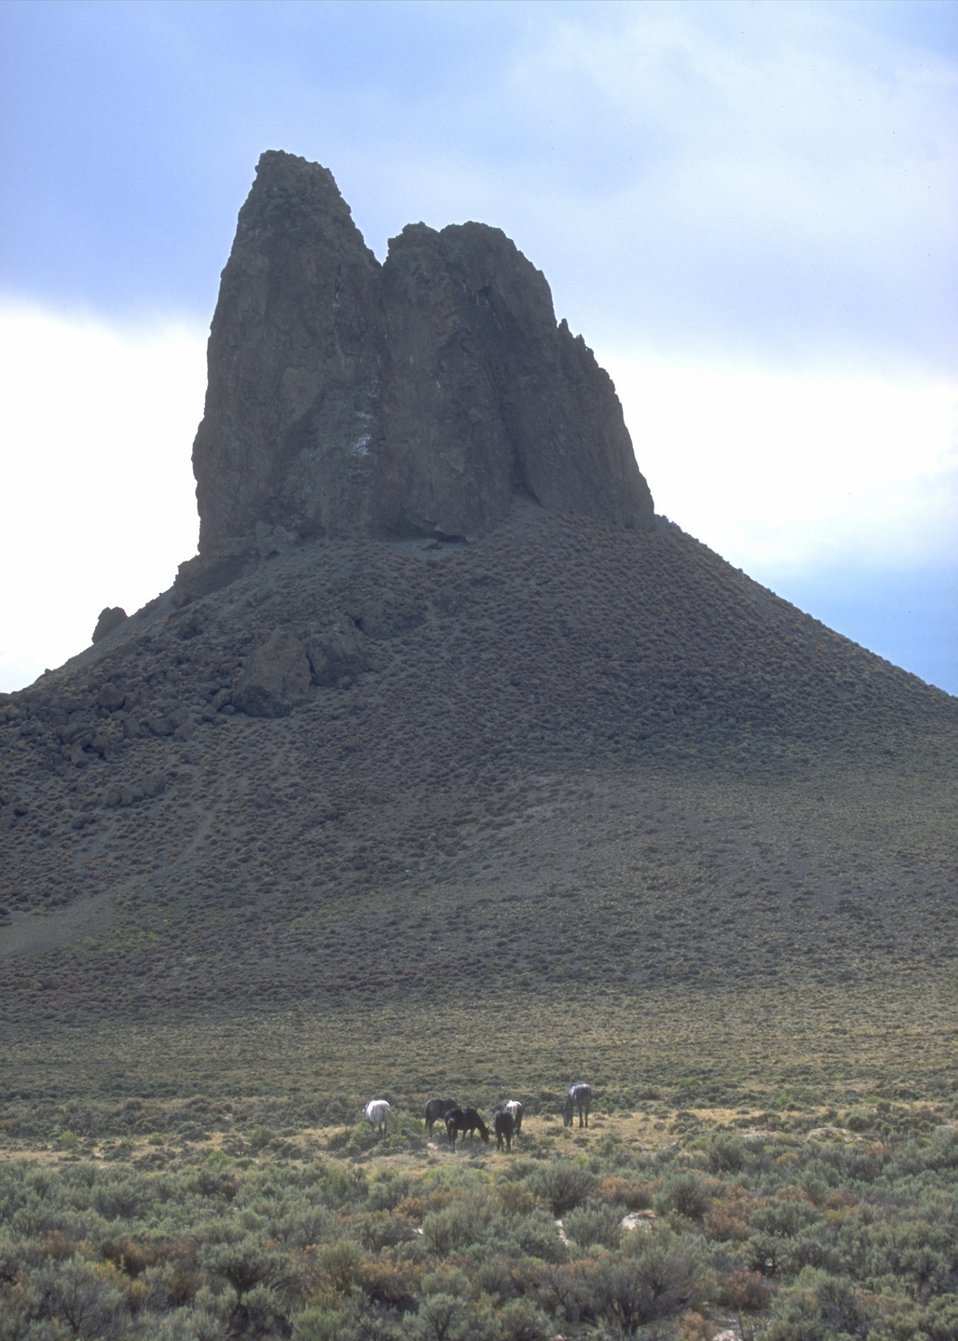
Wild Horses and Boar's Tusk, Rock Springs Field Office.